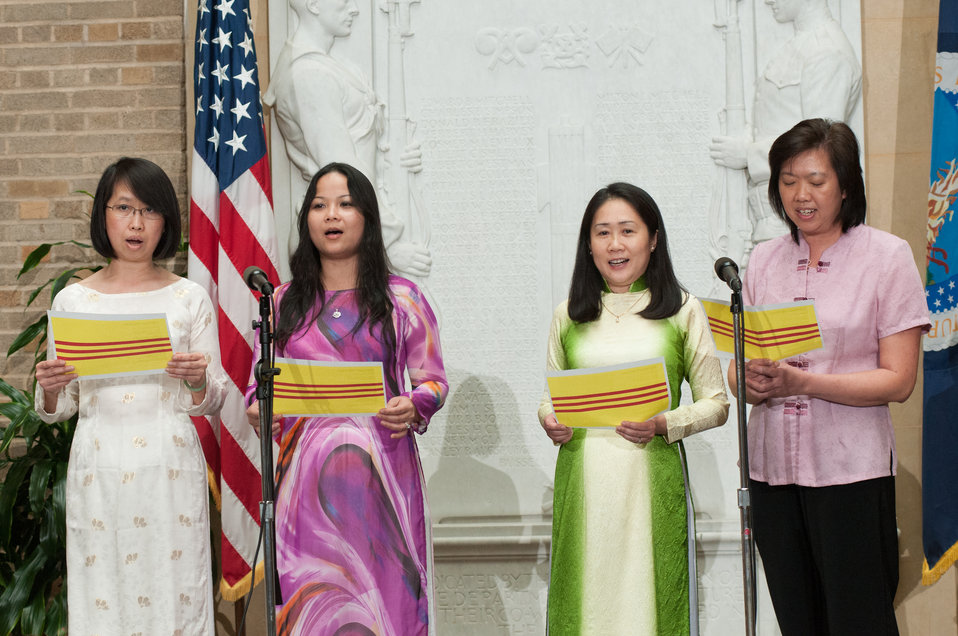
U.S. Department of Agriculture’s (USDA) employees Nina Nguyen, Connie Nguyen, Phuong-mai Do, Huong, and Kim Pham, from the National Agricultural Statistics Service (NAS), sing “Viet Nam! Viet Nam!,” during the USDA Asian Pacific American Heritage Month Observance, at the USDA headquarters, Whitten Building patio, in Washington, D.C., on Thursday, May 23, 2013. This year’s theme is “Building leadership; Embracing the Cultural Values and Inclusions.”